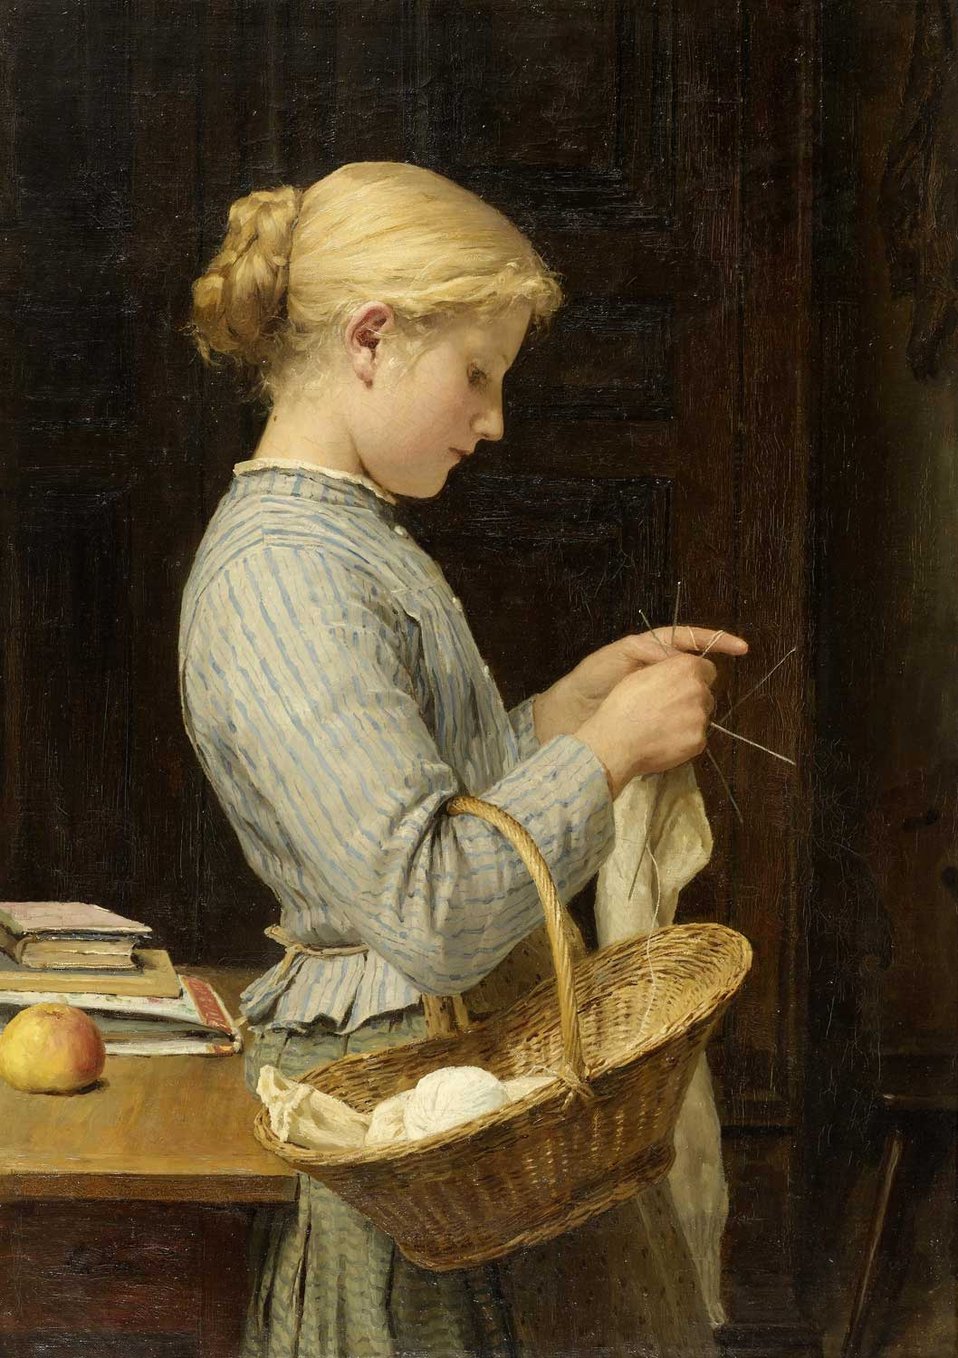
Albert Anker - Strickendes Mädchen (1888)